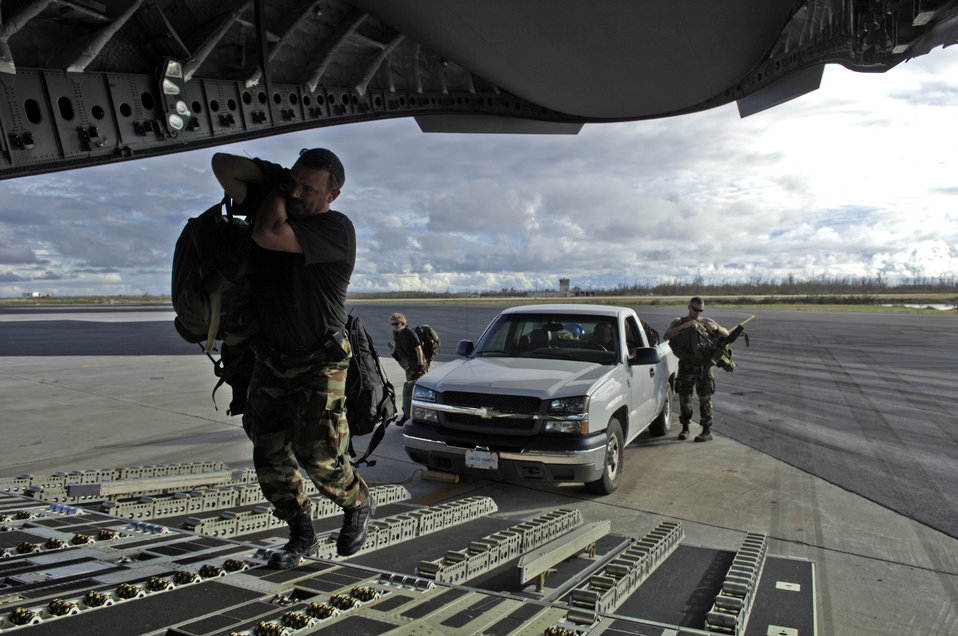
Hickam team begins Wake Island assessment

Airmen from the 36th Contingency Response Group load their gear onto a C-17 Globemaster III on Wake Island Sept. 12. The C-17, from the 535th Airlift Squadron at Hickam Air Force Base, Hawaii, is taking the 36th CRG from Andersen AFB, Guam, back home. The 36th CRG was the initial assessment team on-scene to survey damage after the island was hit by Super Typhoon Ioke Aug. 31.